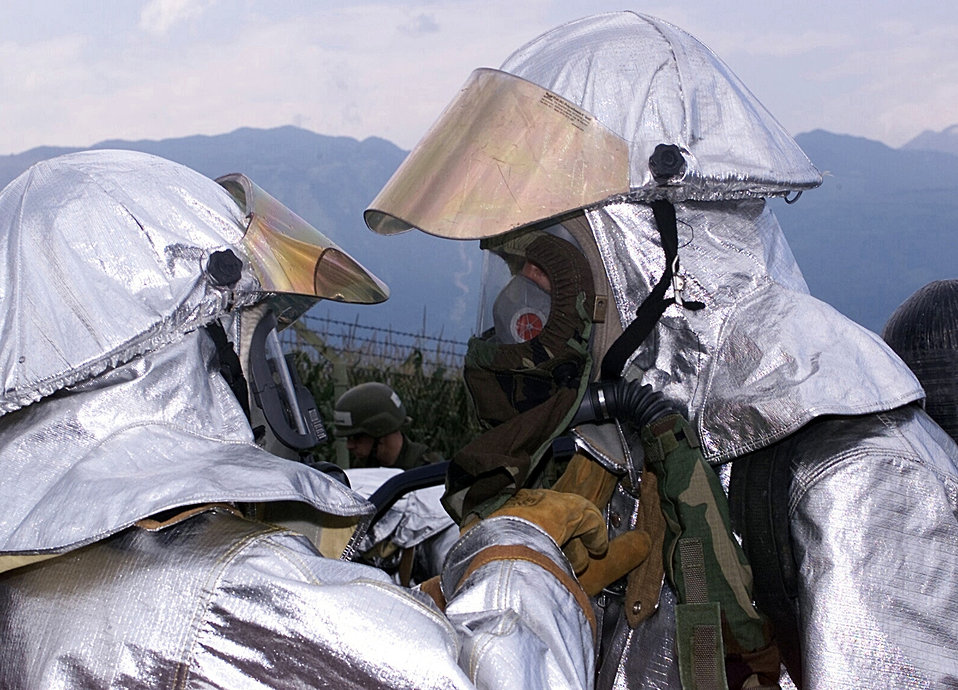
Buddy check

AVIANO AIR BASE, Italy -- Firefighters from the 31st Civil Engineer Squadron perform buddy checks on each other to ensure their gear is worn properly at a mock motor vehicle accident during the Local Salty Nation Exercise here, on Aug. 9, 2001. This is the first Phase II exercise since the wing moved to Aviano seven years ago and is a prelude to a NATO tactical evaluation scheduled for October 2002. In addition to performing everyday operations in a chemical environment, other survive-to-operate processes are tested, including self-aid and buddy care, post attack and unexploded ordnance reconnaissance, and setting up a contamination control area.